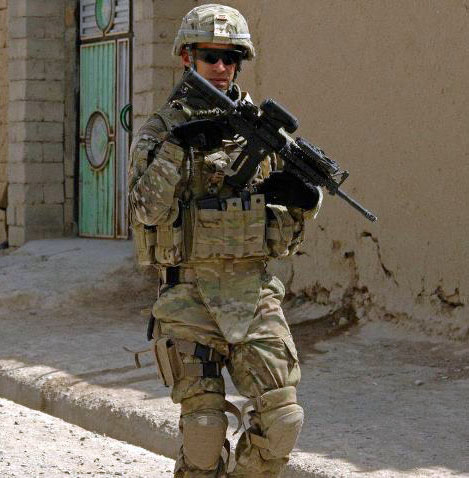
Unconventional repairs

Tech. Sgt. Kenneth Wright, 509th Logistics Readiness Squadron vehicle maintenance low bay NCO in charge, takes part in a security patrol during his deployment to Afghanistan. Wright was deployed from June 2011 until March 2012.